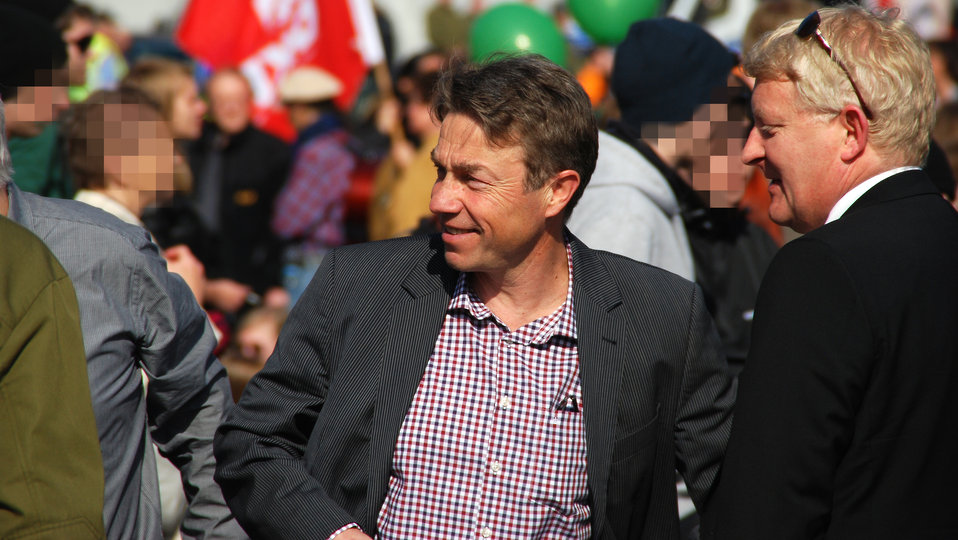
Proteste gegen den Nazi-Aufmarsch am 24.3.2012 in Frankfurt (Oder)